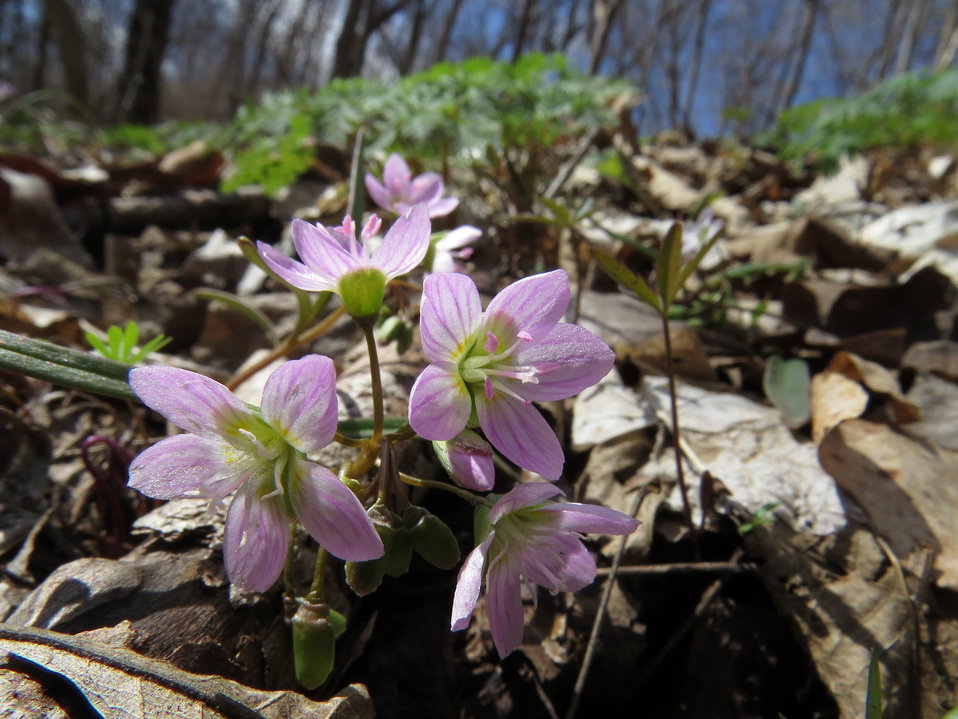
Spring Beauty